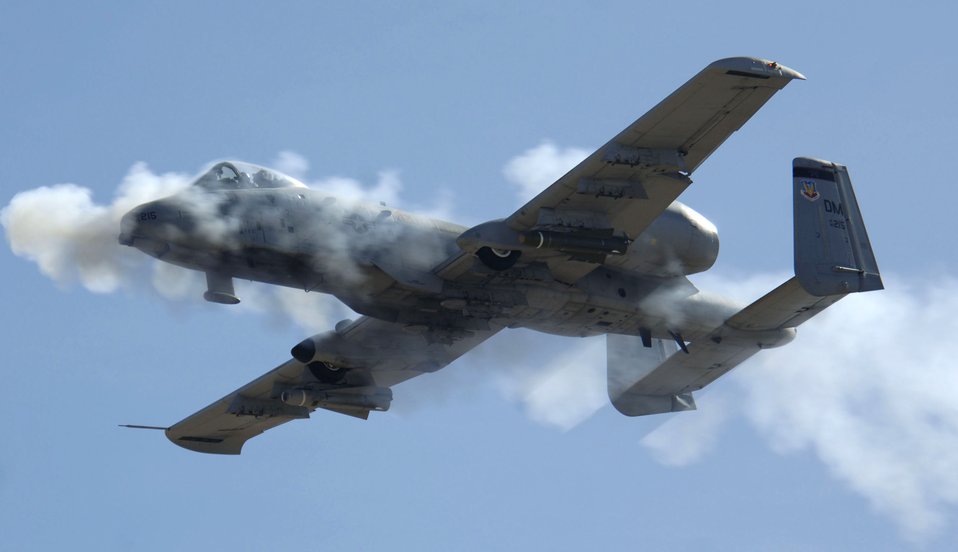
Smoking gun

An A-10 Thunderbolt II fires its 30mm gun at a low-angle strafe as part of the 2006 Hawgsmoke competition, Thursday, March 23, 2006, at the Barry Goldwater Range at Gila Bend Air Force Auxiliary Field, Ariz.